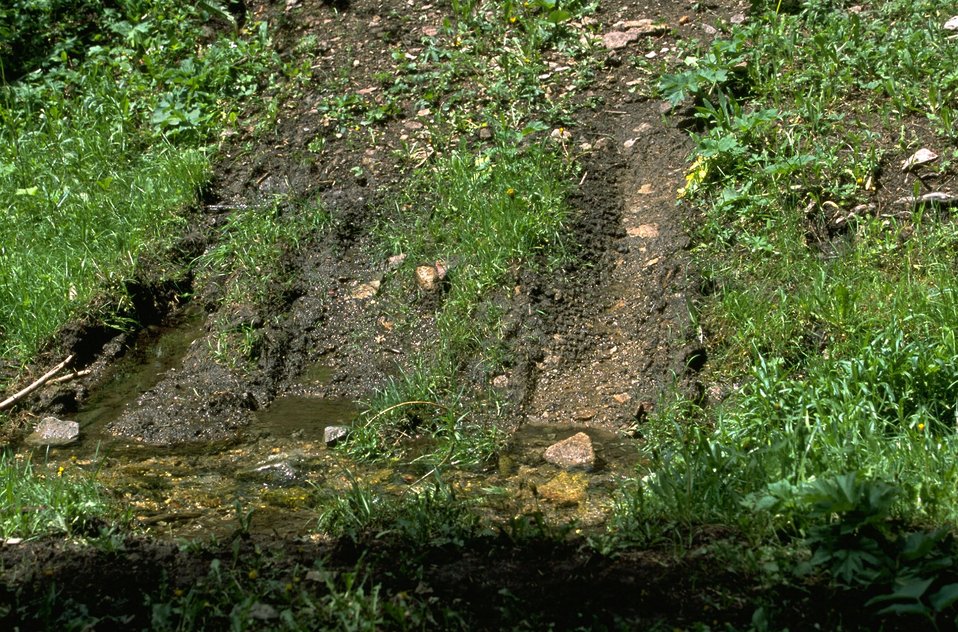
Damage to stream by an OHV trail in LimeKiln Canyon